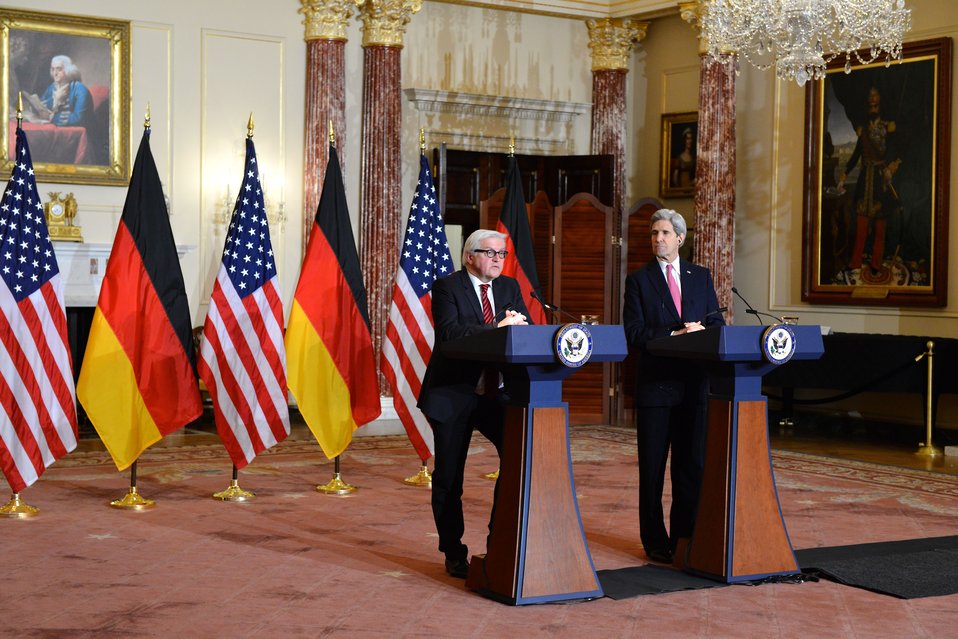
Secretary Kerry and German Foreign Minister Steinmeier Address Reporters

U.S. Secretary of State John Kerry Kerry and German Foreign Minister Frank-Walter Steinmeier address reporters after their working lunch at the U.S. Department of State in Washington, D.C., on February 27, 2014.